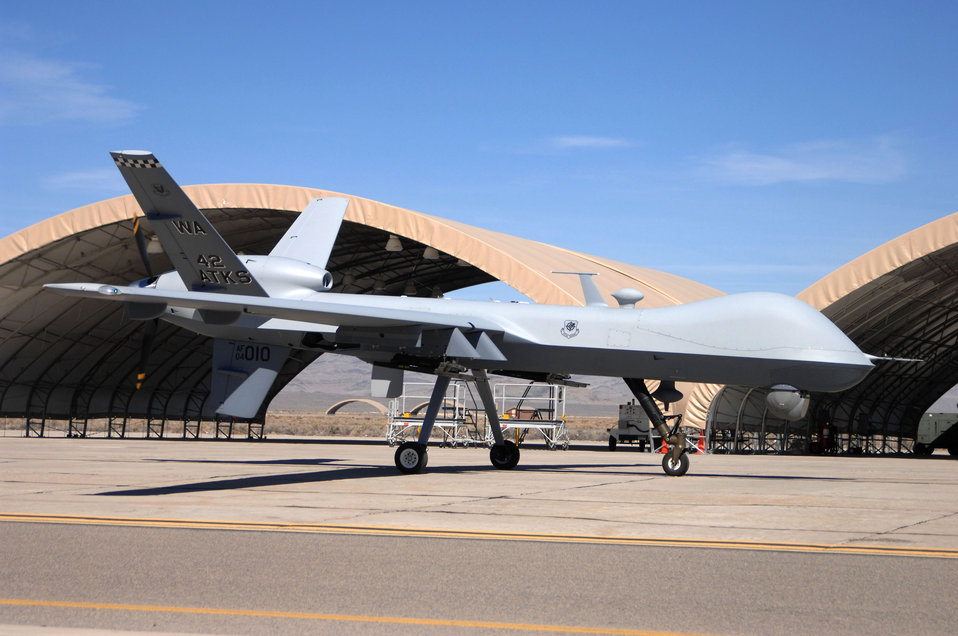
First MQ-9 Reaper makes its home on Nevada flightline

The MQ-9 Reaper Unmanned Aerial Vehicle taxis into Creech Air Force Base, Nev., Feb. 13 marking the first operational airframe of its kind to land here. This Reaper is the first of many soon to be assigned to the 42nd Attack Squadron.